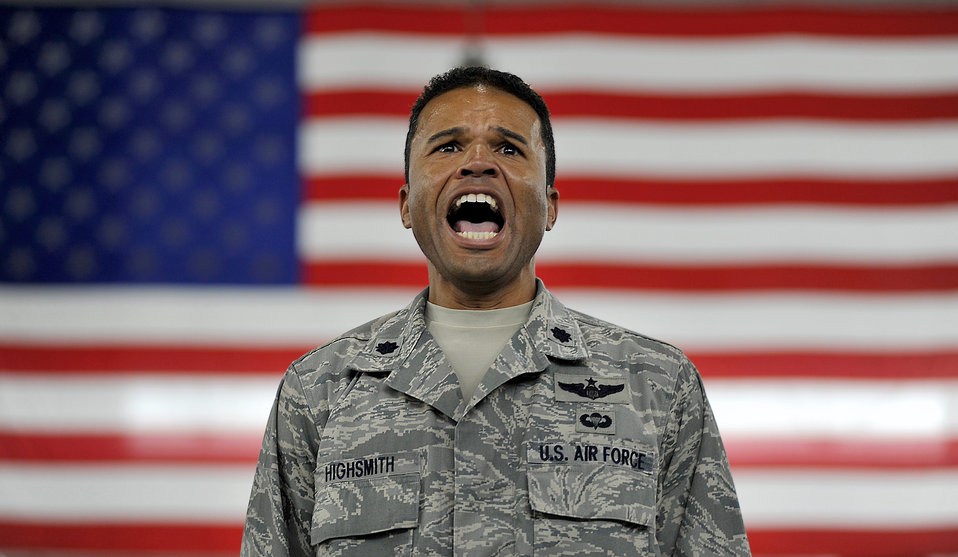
ATTENTION!

Lt. Col. Tom Highsmith issues commands to his unit during the inactivation ceremony June 11, 2010, for the 816th Contingency Response Group at Joint Base McGuire-Dix-Lakehurst, N.J. Colonel Highsmith is the director of operations for the 816th Ground Mobility Squadron.